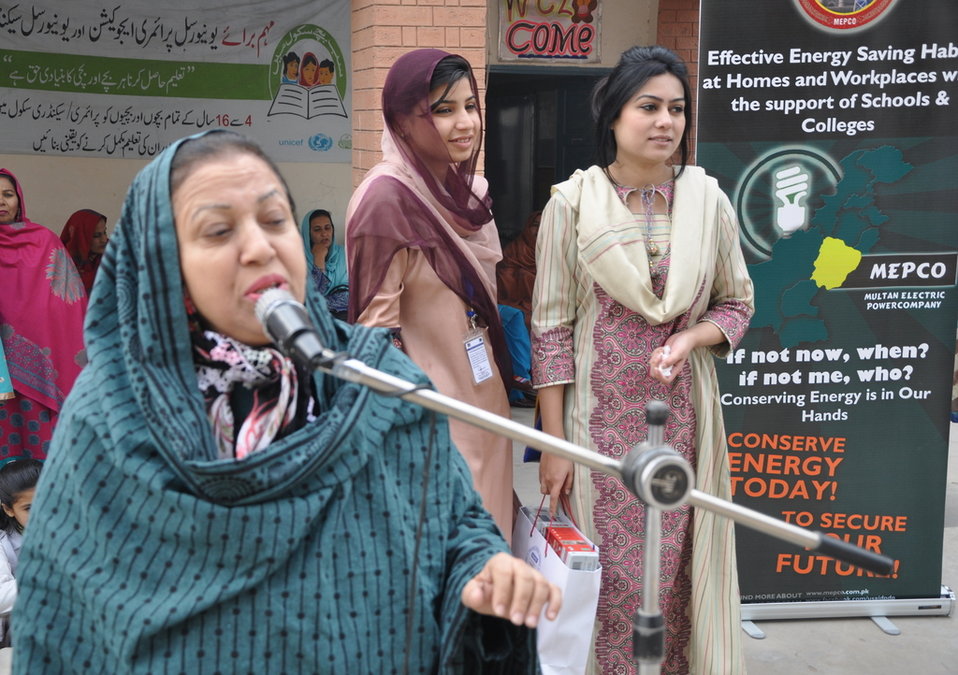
USAID Power Distribution Program-Energy Conservation Seminar at Govt.Girls High School Chah Bohar Wala, Multan

Multan, January 30, 2013 - the USAID Power Distribution Program with the collaboration of MEPCO, held an Energy Conservation Seminar at Govt.Girls High School, Chah Bohar Wala Multan.
Principal of the Govt, Girls High School Chah Bohar Wala Multan , motivated the students to adopt the practices addressed in the seminar and appreciated the efforts made by USAID Power Distribution Program to spread such productive awareness among the young generation of Pakistan